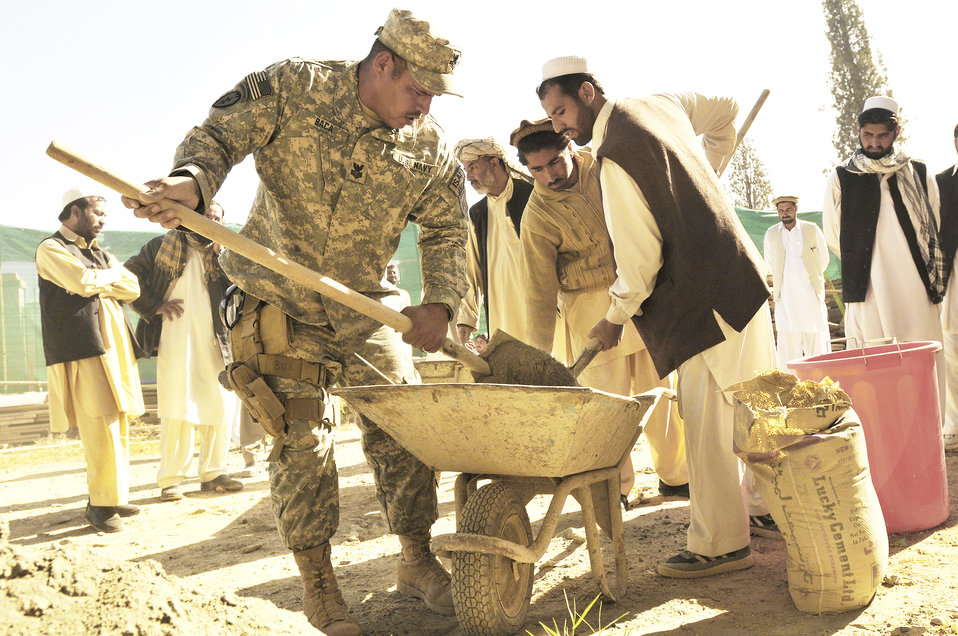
American engineers conduct quality assurance training in Afghanistan

KHOST PROVINCE, Afghanistan - U.S. Navy Builder 1st Class Iascc Baca, Khost Provincial Reconstruction Team engineer, teaches proper mortar mixing technique to local engineers, construction contractors, and foremen during a monthly contractor training session held at the Civil Military Operations Center, Khost, Afghanistan, Nov. 14. Engineers from the Khost PRT provided construction quality assurance training to locals in order to facilitate high quality construction practices in the region.